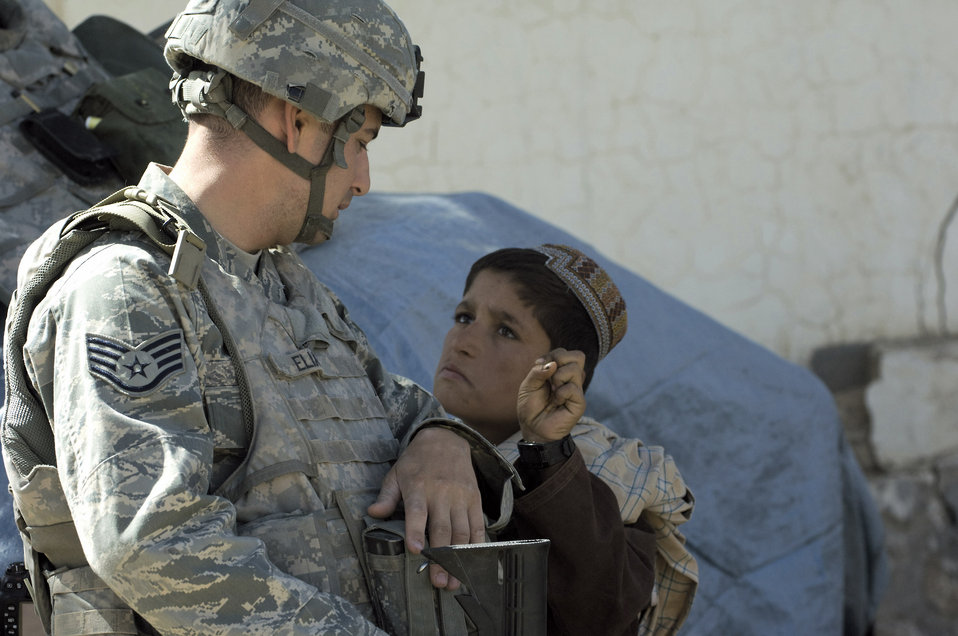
Airman helps make a difference in Afghanistan

Staff Sgt. Don Elias talks with an Afghan boy while providing security at a veterinary outreach held by the Zabul Provincial Reconstruction Team Oct. 17 in Qalat, Afghanistan. The PRT provided free treatment to the nomadic Kuchi tribe's livestock. Sergeant Elias is deployed to the PRT as the force protection NCO in charge from Wright-Patterson Air Force Base, Ohio. He is a native of Buffalo, N.Y.